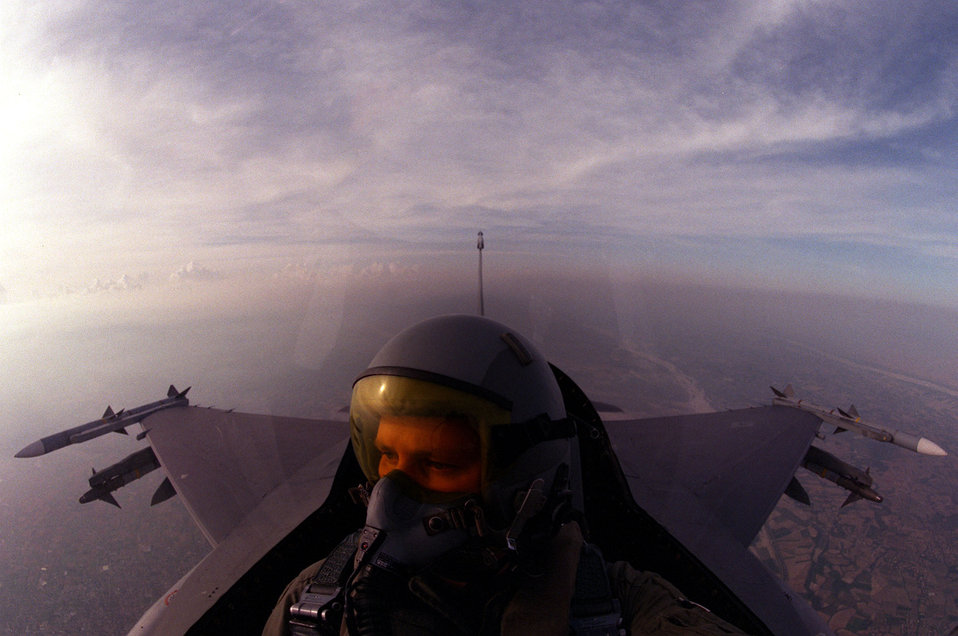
Excellent view

FILE PHOTO -- An F-16 Fighting Falcon from the 510th Fighter Squadron, Aviano Air Base, Italy, flys a Combat Air Patrol mission May 3, 1999. Planes flying the CAP missions provide air cover for NATO Operation Allied Force strike missions in Yuglslavia.